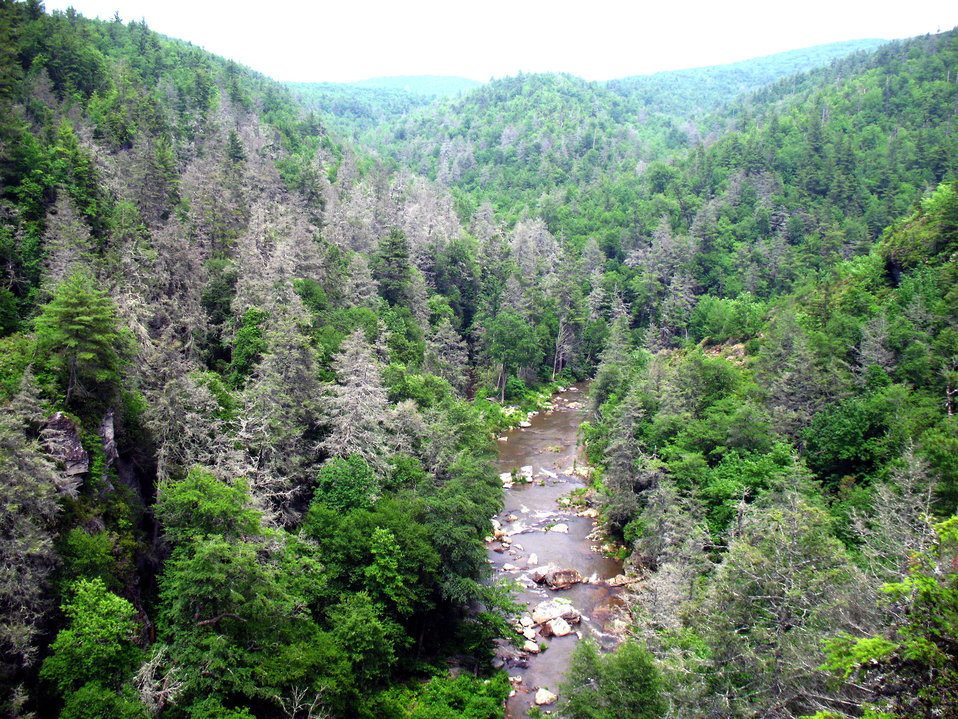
For Warn

Trees known as gray ghosts are a common sight in the southern Appalachians. A hemlock woolly adegid infestation has killed many hemlock trees in the Linville Gorge area of Pisgah National Forest in North Carolina.